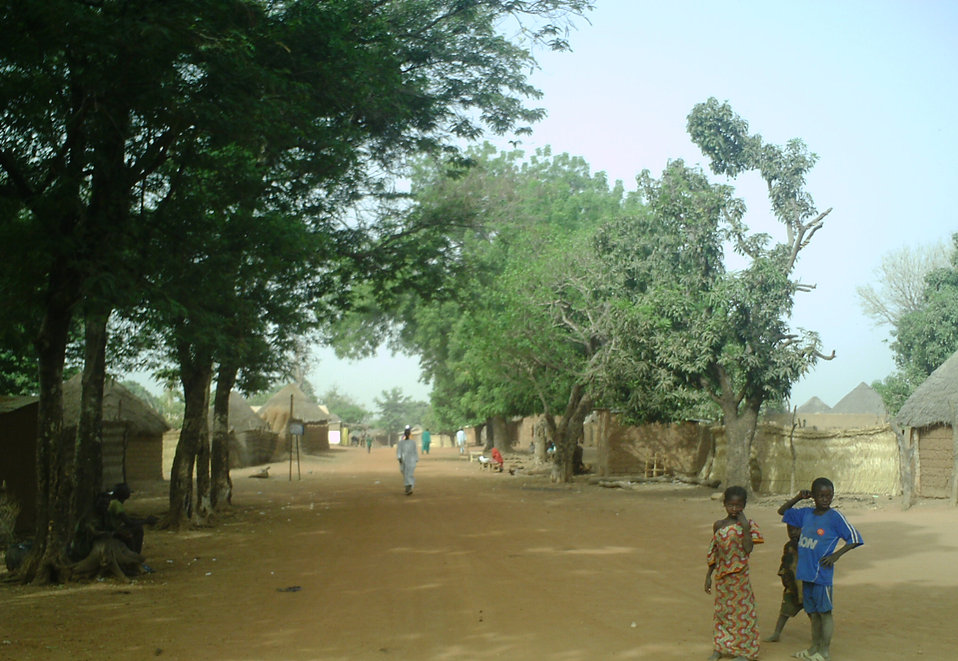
Local village directly outside Bouba Ndjida National Park in Cameroon.